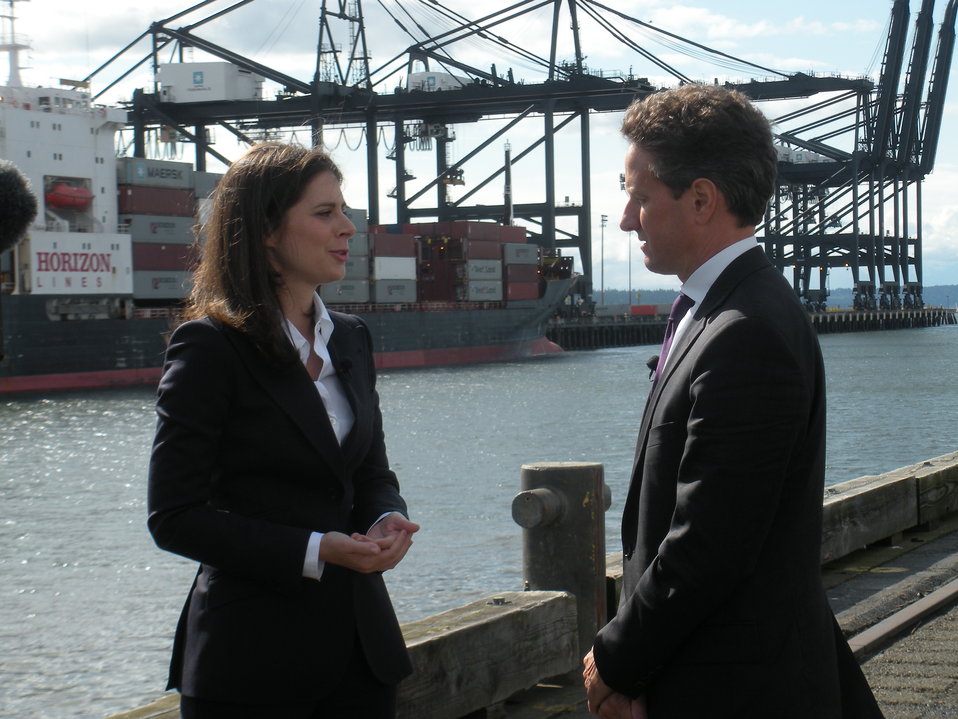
Tacoma, 5/18/2010

Erin Burnett interviews Secretary Geithner at the Port of Tacoma.